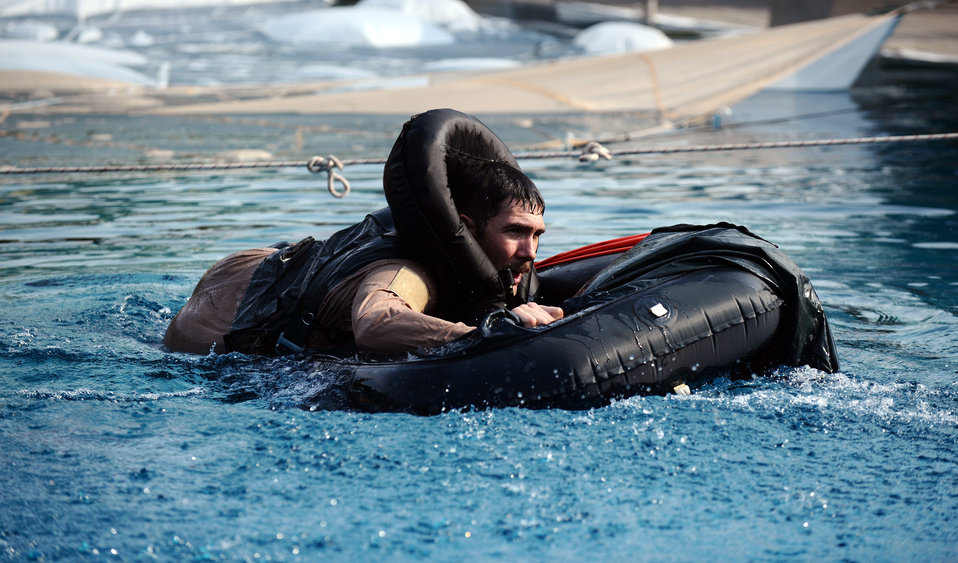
Clinging for life

Tech. Sgt. Robert Martin climbs into a life raft July 29, 2011, during water survival training at Spangdahlem Air Base, Germany. Martin demonstrated proper procedures to pilots from the 81st Fighter Squadron who must complete water survival training. Martin is assigned to the 52nd Fighter Wing.